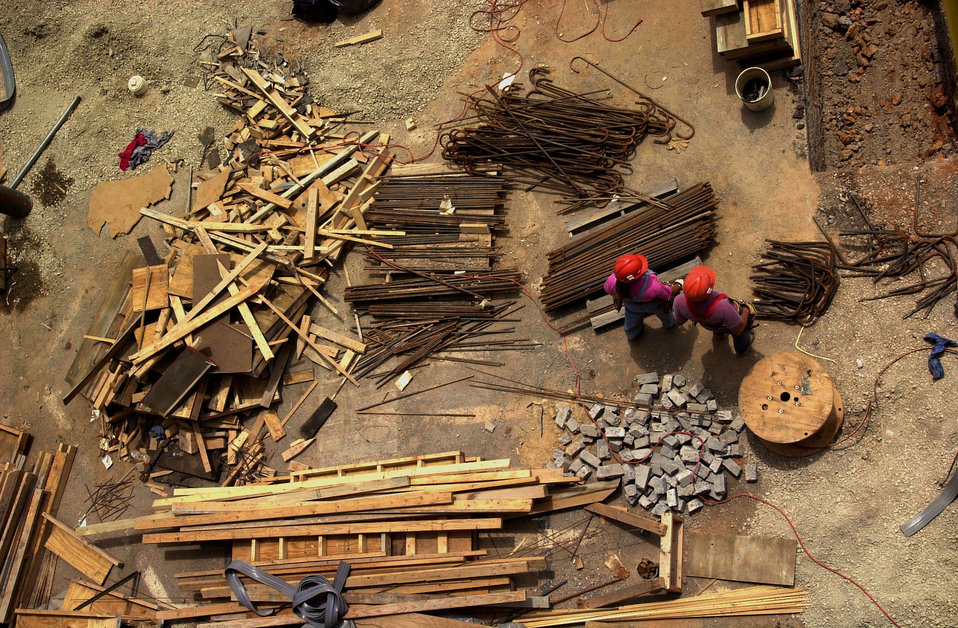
Construction at ETTP Oak Ridge

00-0086-16 DOE photo by Lynn Freeny East Tennessee Technology Park Oak Ridge ,Tennessee 5-16-2000